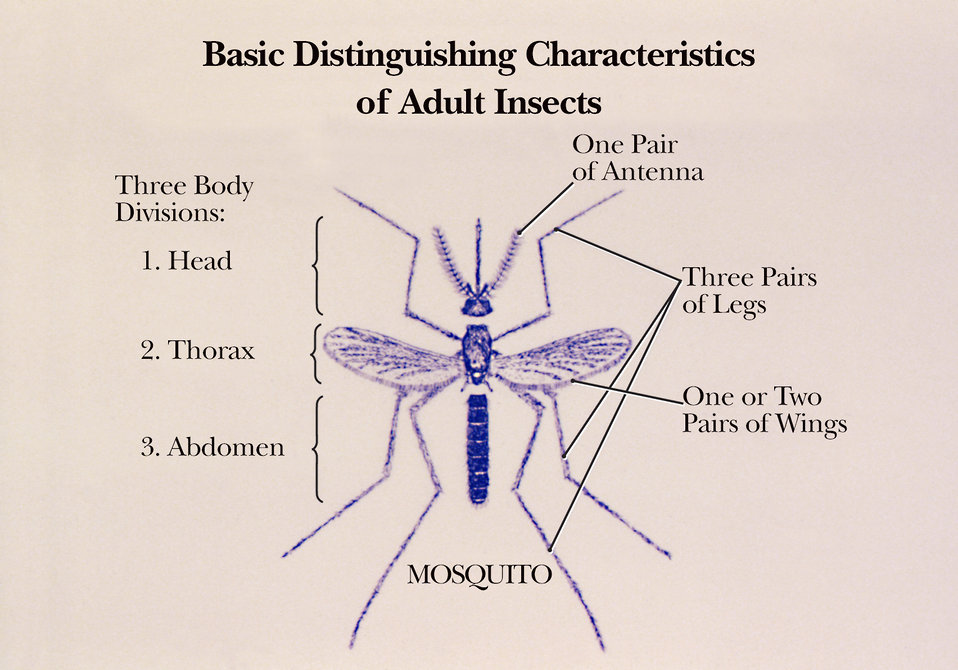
Though this is an illustration of a mosquito, it reveals some of the basic characteristics of all adult insects.